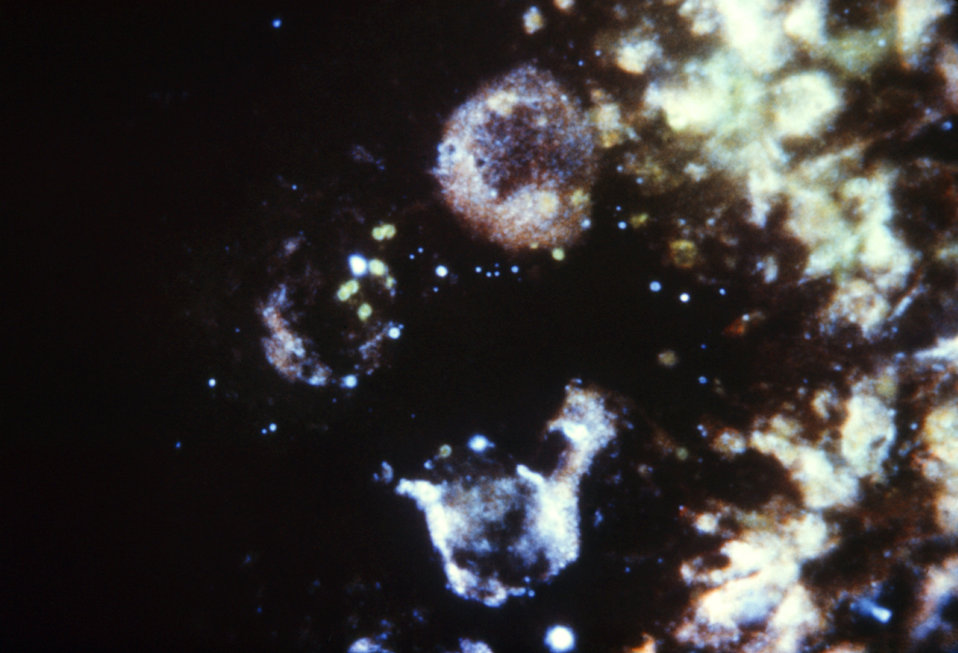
This is a photomicrograph of a Neisseria gonorrhea specimen treated with a flazo orange fluorochrome counterstain.